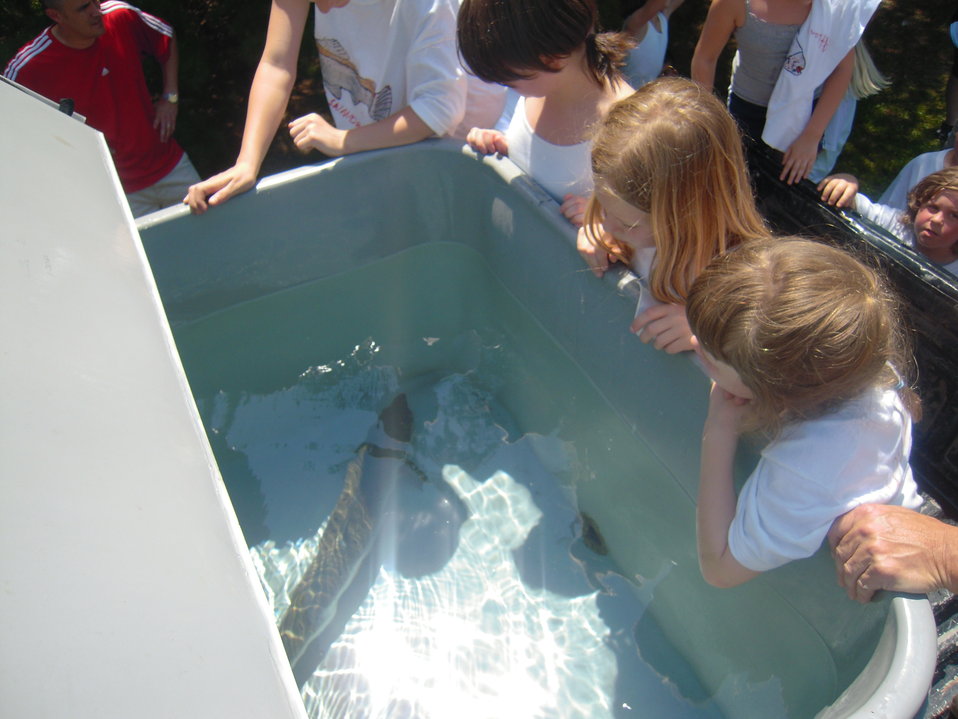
Looking at Atlantic salmon